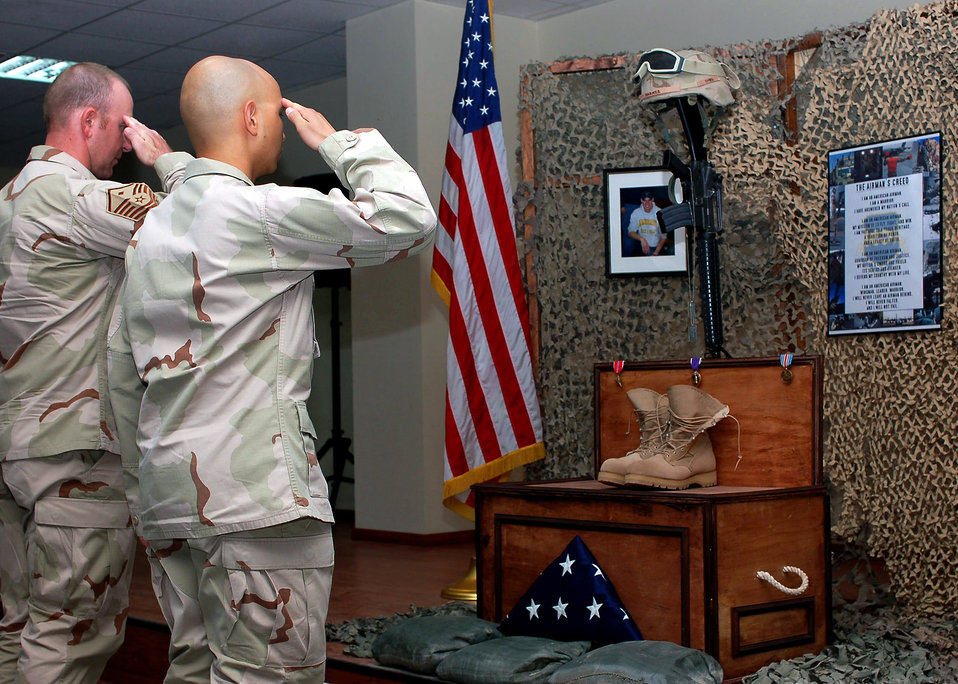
Airmen, Soldiers pay respects to fallen comrade in arms

386th Air Expeditionary Wing Airmen salute a memorial display, June 15, after a ceremony held in honor of Airman 1st Class Eric Barnes, who was killed in action while on a convoy mission in support of Operation Iraqi Freedom. The ceremony was the first of two held at different locations in Southwest Asia. Airman Barnes was on his second deployment to the 424th Medium Truck Detachment.